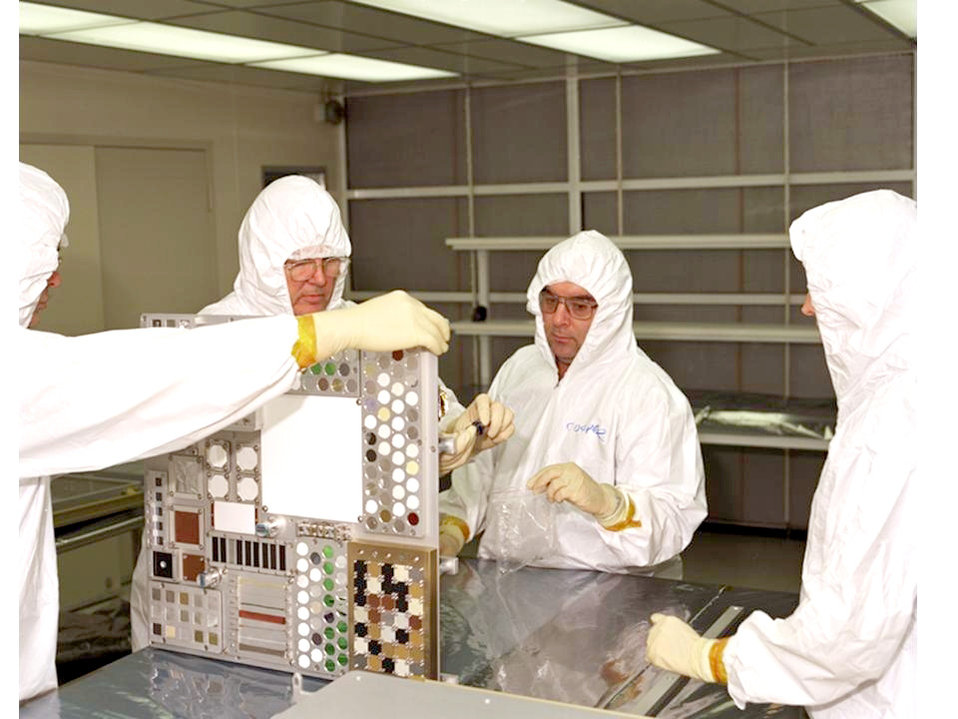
AF experiments to return home with Discovery

WRIGHT-PATTERSON AIR FORCE BASE, Ohio -- Air Force and NASA integrators attach experiment material samples to a passive experiment container that has been bolted to the International Space Station since 2001. Air Force Research Laboratory scientists here are studying materials as part of the Materials on the International Space Station Experiment. The Discovery shuttle crew will remove the carriers and return them to Earth as part of their return-to-flight mission which launched July 26.